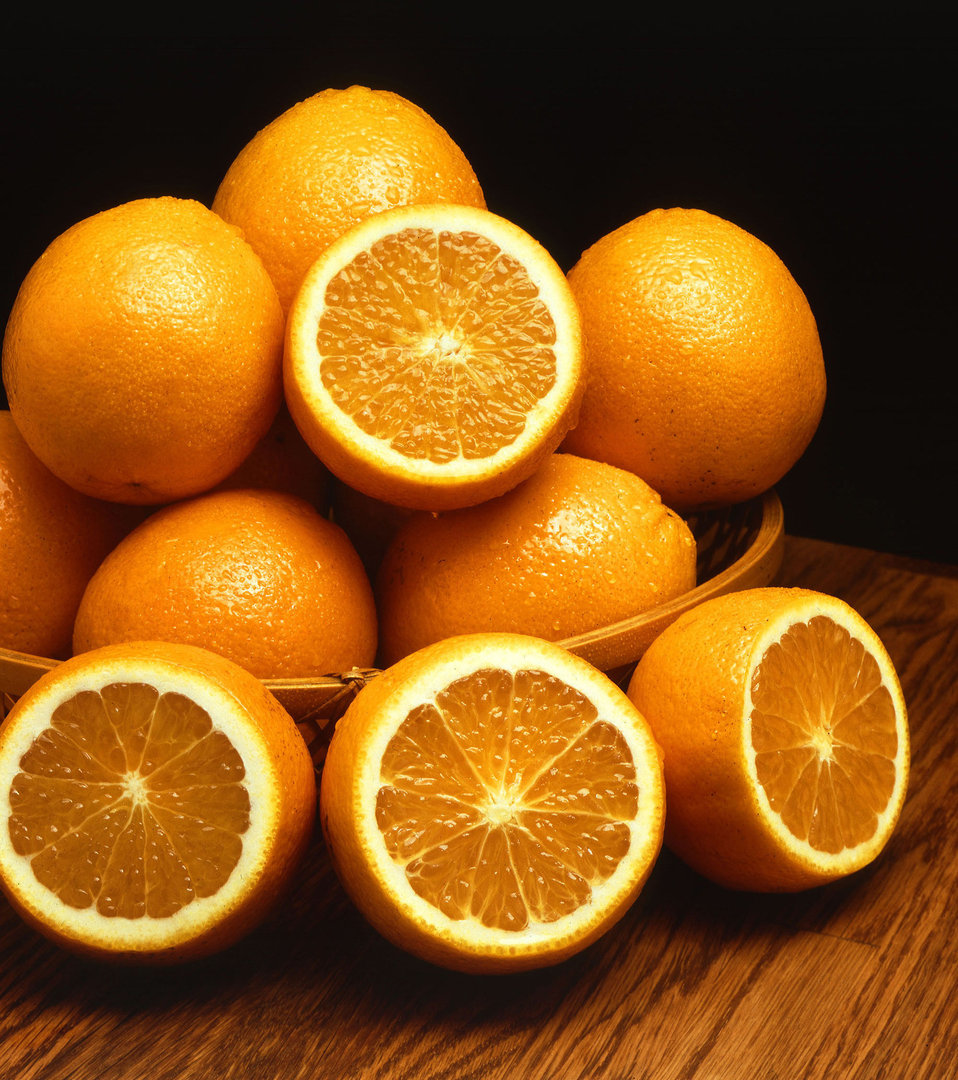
The Ambersweet orange is a cold hardy orange variety developed by Dr. C. J. Hearn of the U.S. Department of Agriculture (USDA) Agricultural Research Service (ARS) Horticultural Research Station in Orlando, FL.